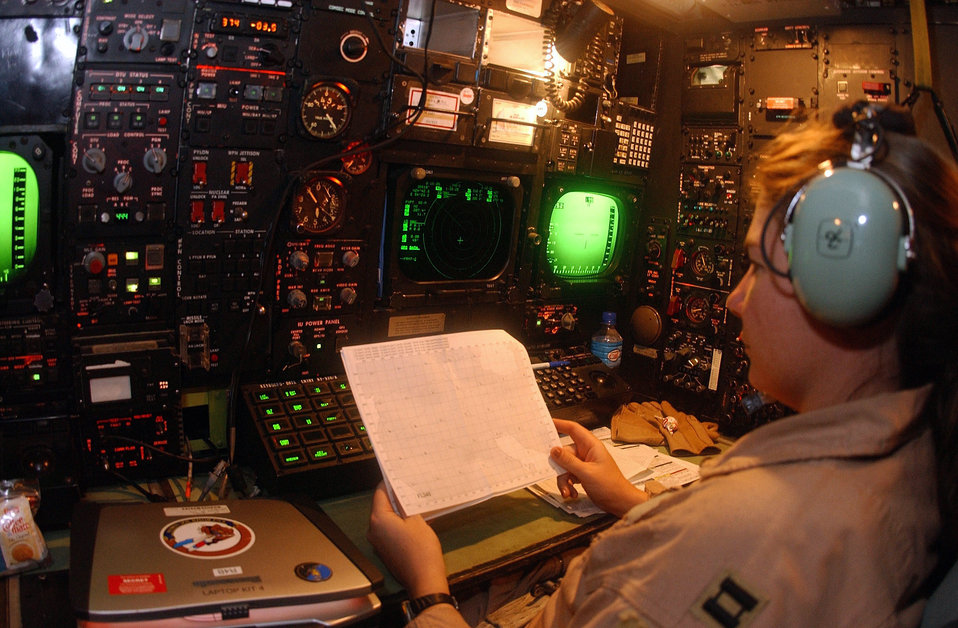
Wind check

OPERATION IRAQI FREEDOM -- B-52 navigator Capt. Michelle Gillespie, 40th Expeditionary Bomb Squadron, checks winds over the target area during a bombing mission in Iraq, April 4. Operation Iraqi Freedom is the multi-national coalition effort to liberate the Iraqi people, eliminate Iraqi's weapons of mass destruction and end the regime of Saddam Hussein.